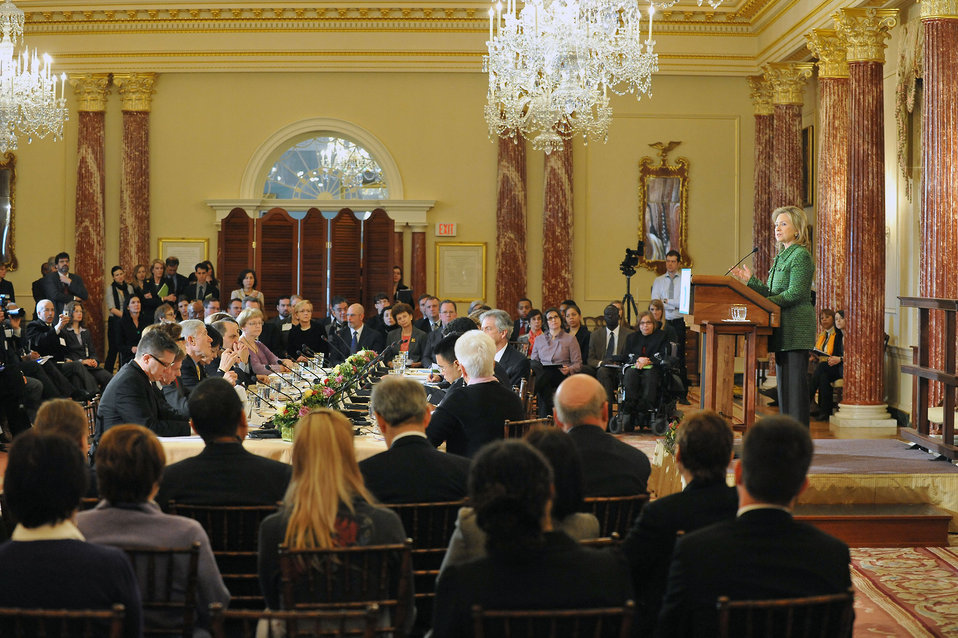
Secretary Cilnton Delivers Remarks

U.S. Secretary of State Hillary Rodham Clinton delivers remarks at the first ever Strategic Dialogue With Civil Society at the U.S. Department of State in Washington, D.C., on February 16, 2011.